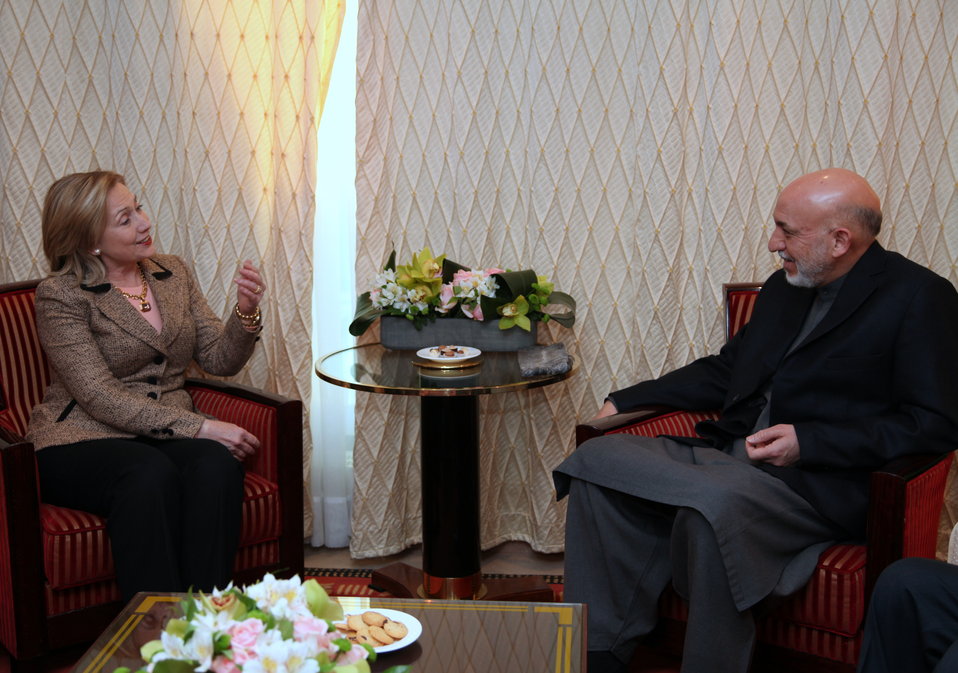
Secretary Clinton Holds a Bilateral Meeting With Afghan President Karzai

U.S. Secretary of State Hillary Rodham Clinton holds a bilateral meeting with Afghan President Hamid Karzai in Munich, Germany, on February 5, 2011.